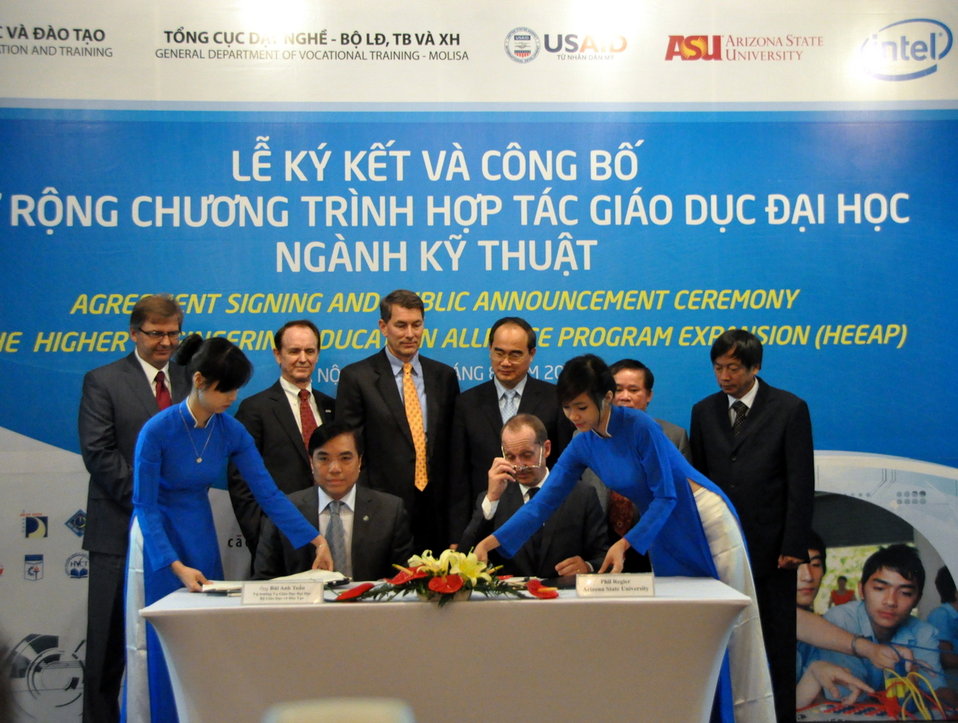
Higher Engineering Education Alliance Program Expansion Launch

Hanoi, August 20, 2012.